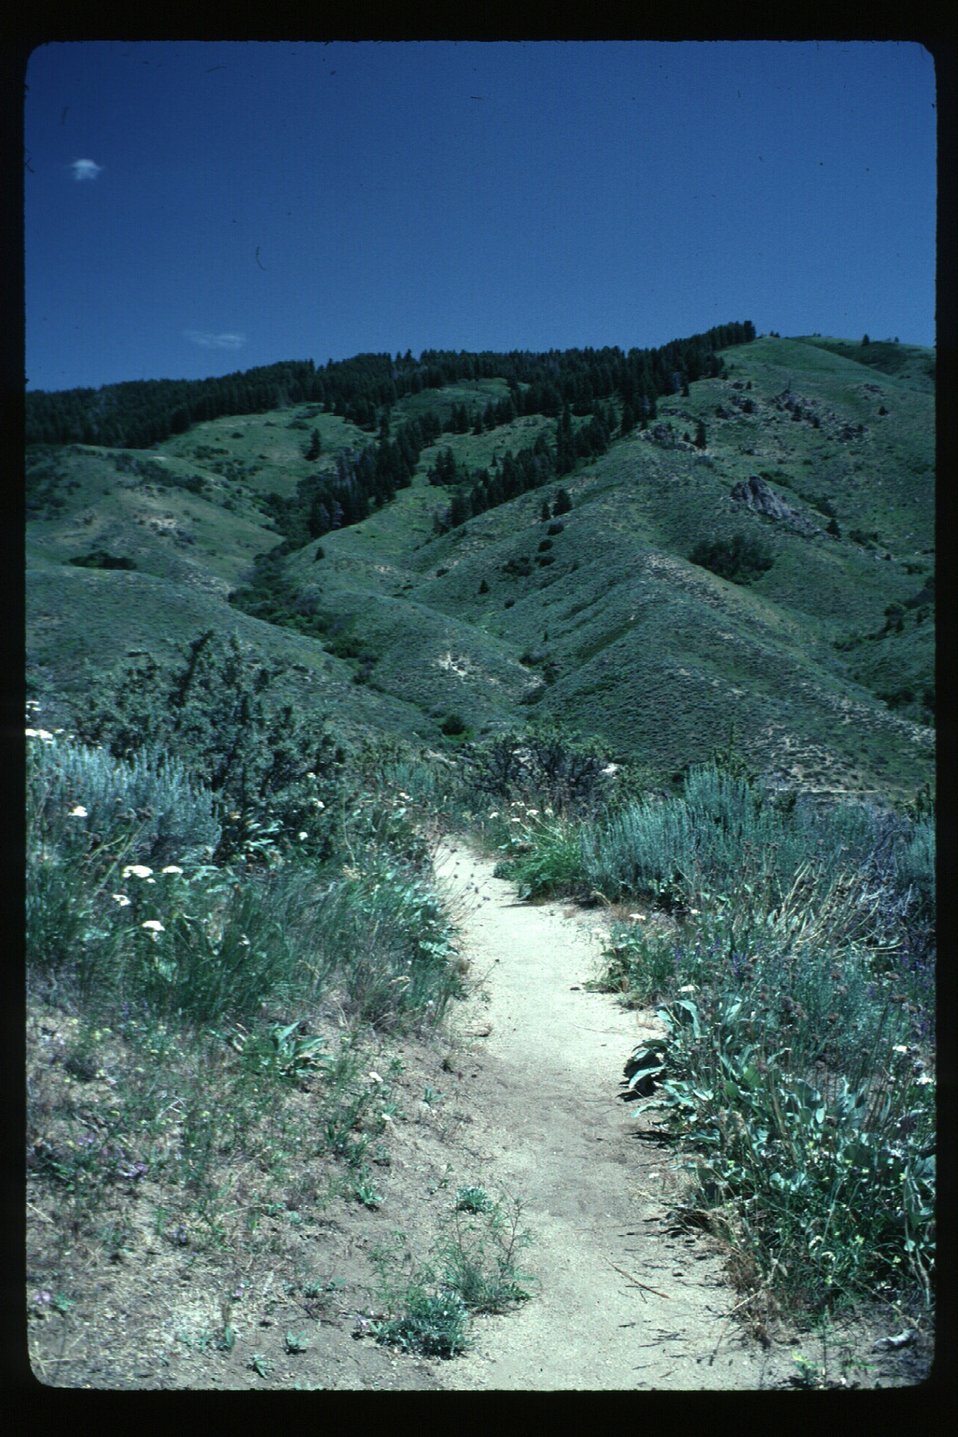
Bike Trail Boise Front Four Rivers Field Office LSRD Lower Snake River District